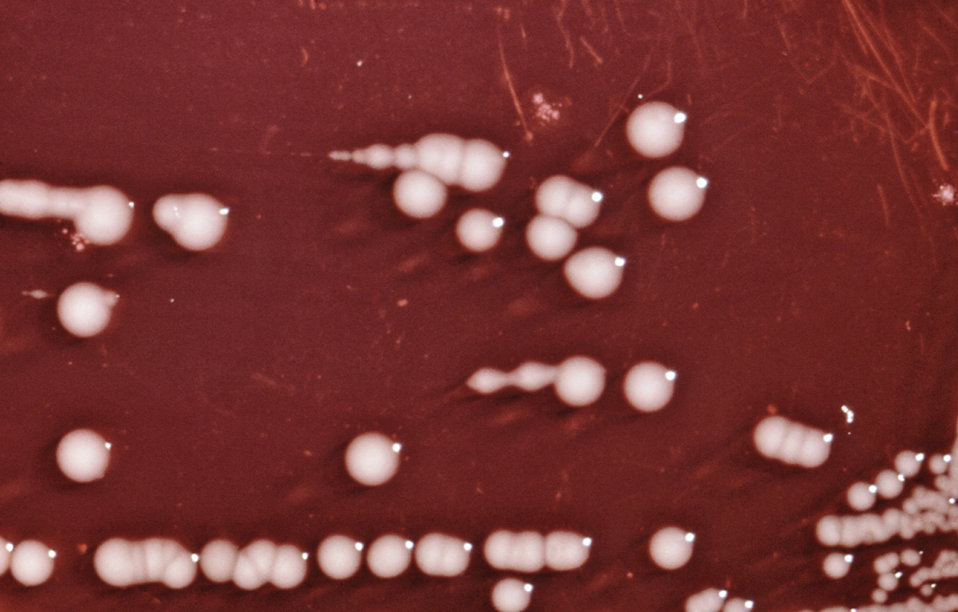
This photograph depicts the colonial growth pattern displayed by Providencia alcalifaciens bacteria cultured on a Xylose Lysine Sodium Deoxycholate (XLD) agar plate.